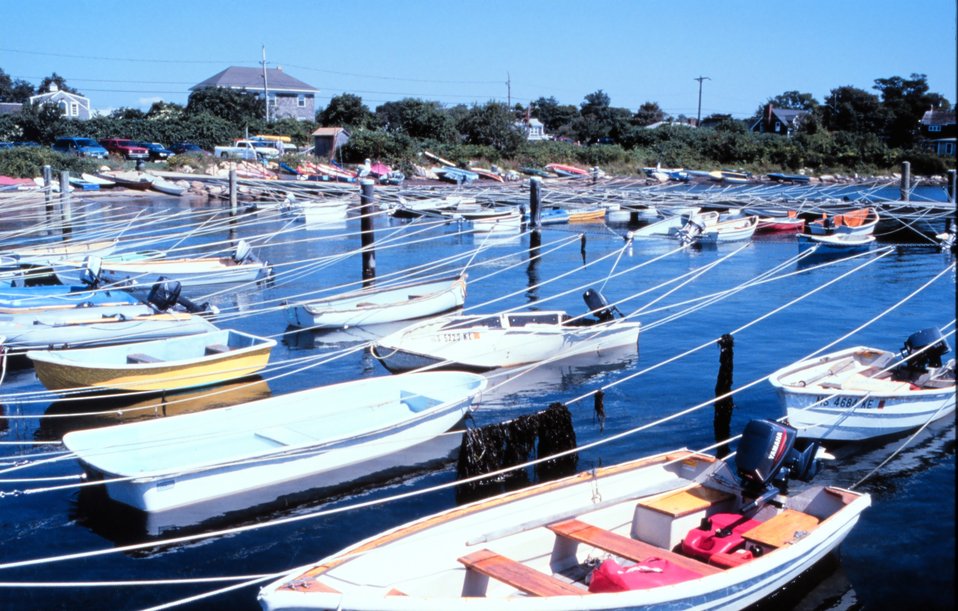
Woods Hole Yacht Club, Great Harbor at Woods Hole